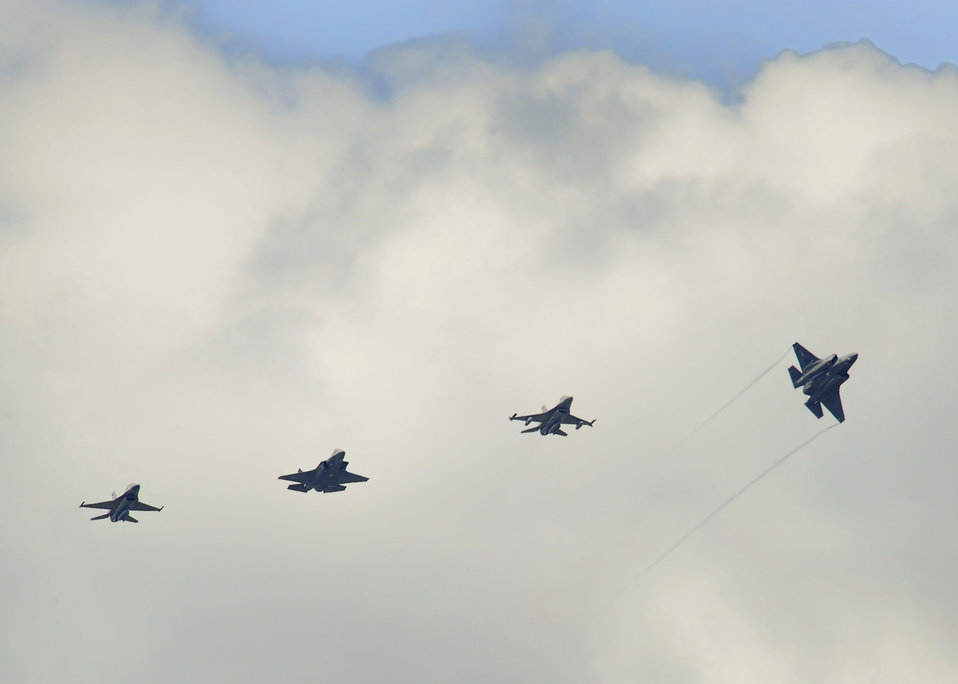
Eglin F-35 number increases to four

Two F-35A Lightning II joint strike fighters were delivered to Eglin Air Force Base, Fla., with 33rd Fighter Wing-piloted F-16 Fighting Falcons escorting the jets to their new home Aug. 31, 2011. Labeled as AF-10 and AF-11 by Lockheed Martin, the JSFs bring the total count of the fifth-generation fighter aircraft at Eglin AFB to four.